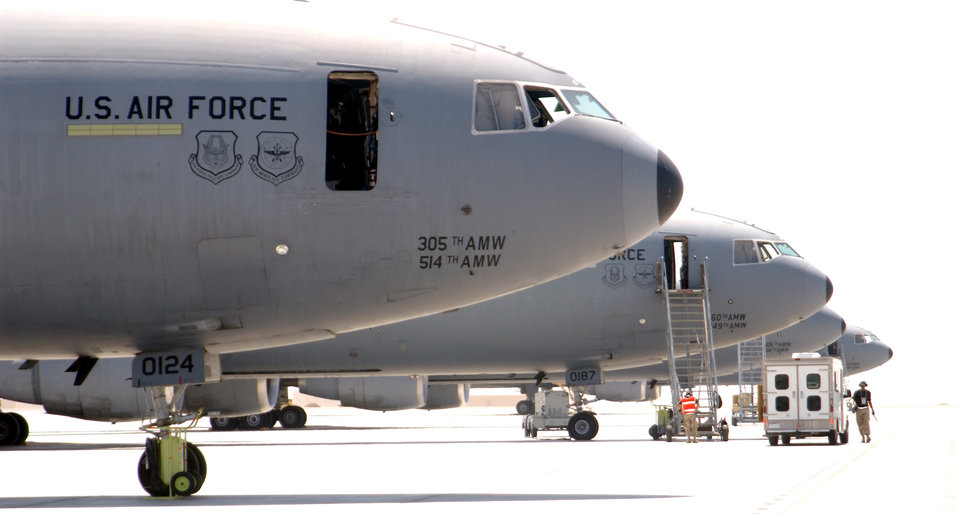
KC-135 launch

Maintenance Airmen work on the flightline at a forward-operating base in Southwest Asia Sept. 19. This location is home to the 380th Air Expeditionary Wing, the largest air refueling squadron in the theater of operations that includes KC-10 Extenders and KC-135 Stratotankers.